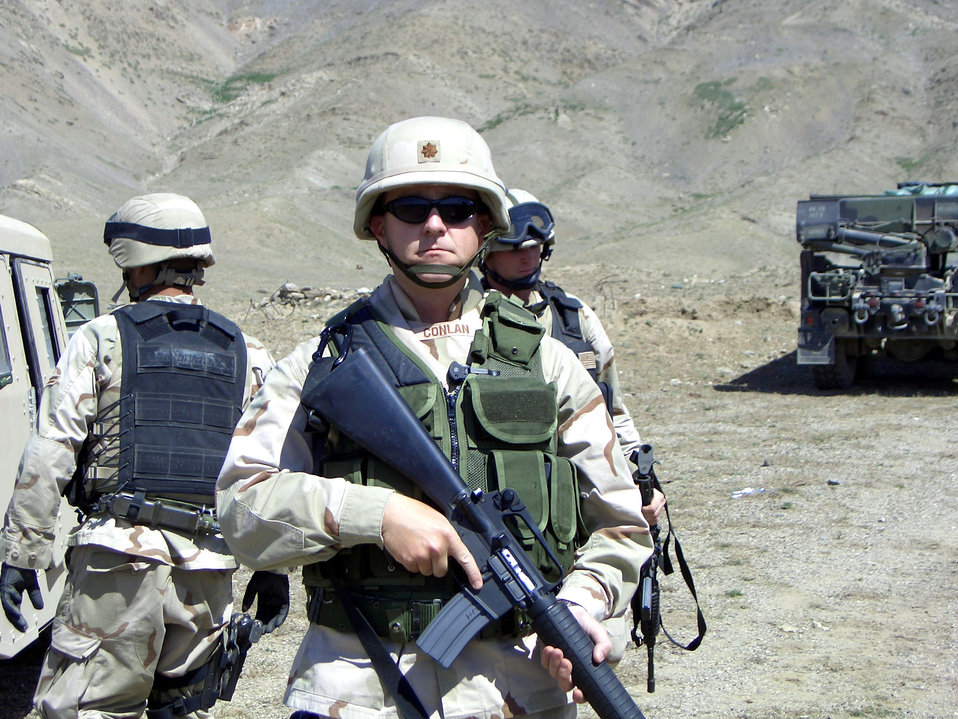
Mine explosion puts two Airmen on different paths to recovery

Maj. Matthew Conlan on patrol in Afghanistan shortly before the mine explosion.